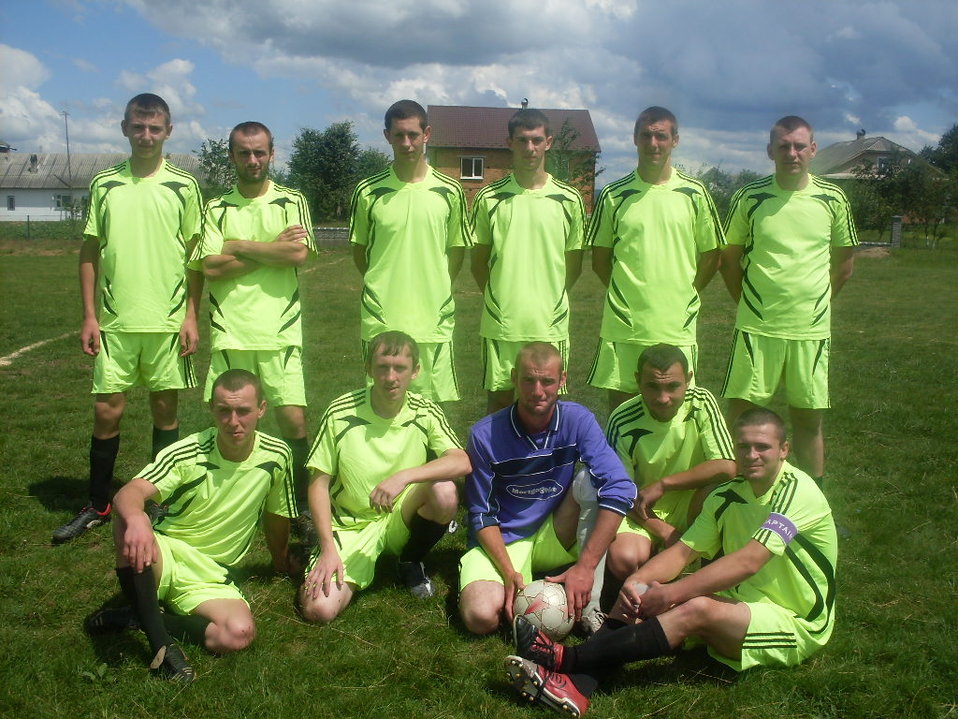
Українська: Команда 'Вільхівка': Команда 'Вільхівка'